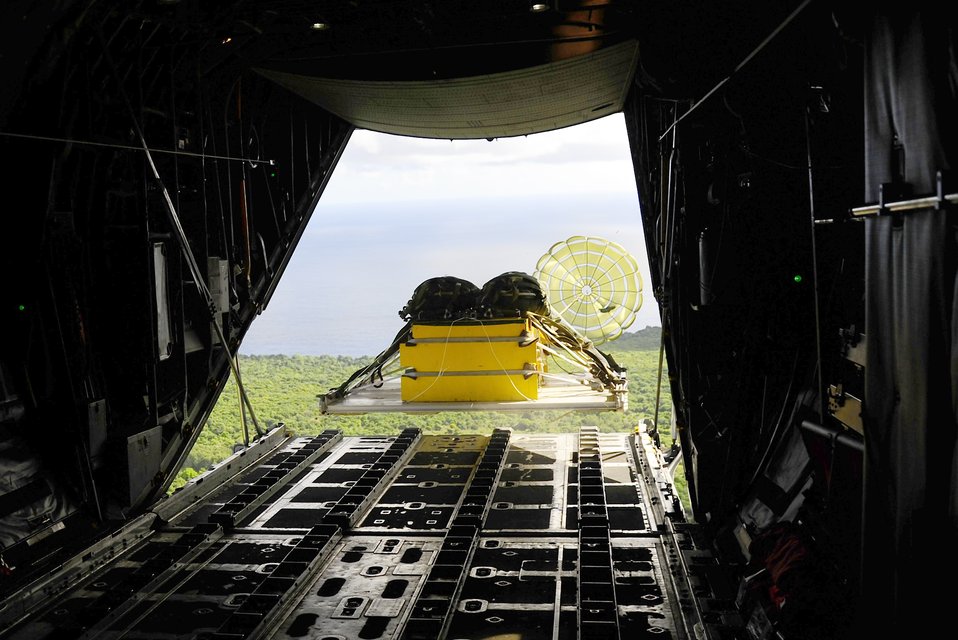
Cope North

A pallet is airdropped from a C-130 Hercules Feb. 23, 2011, during exercise Cope North over Guam.